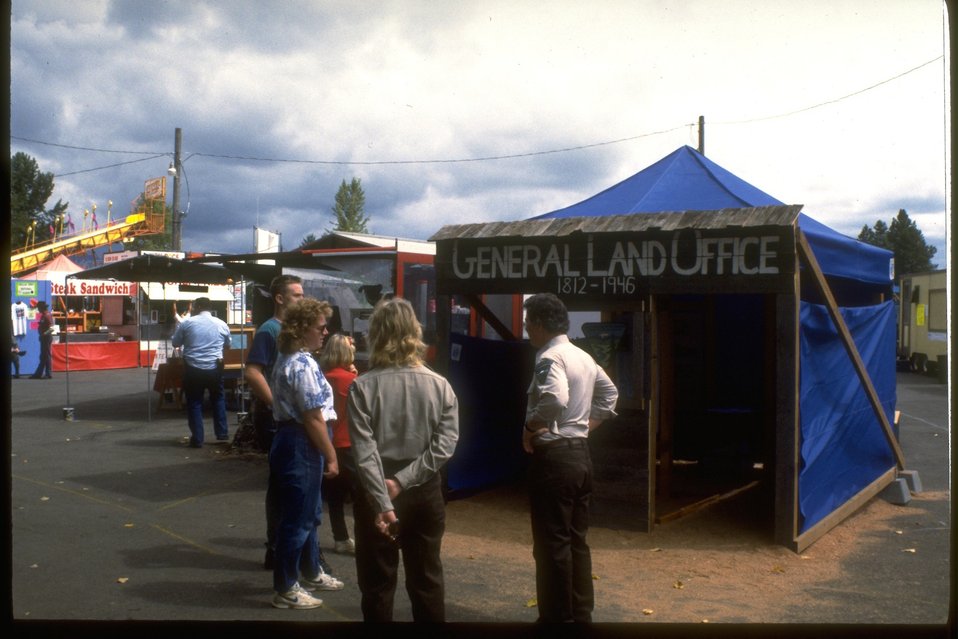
Exhibit at Bohemia Mining Days.